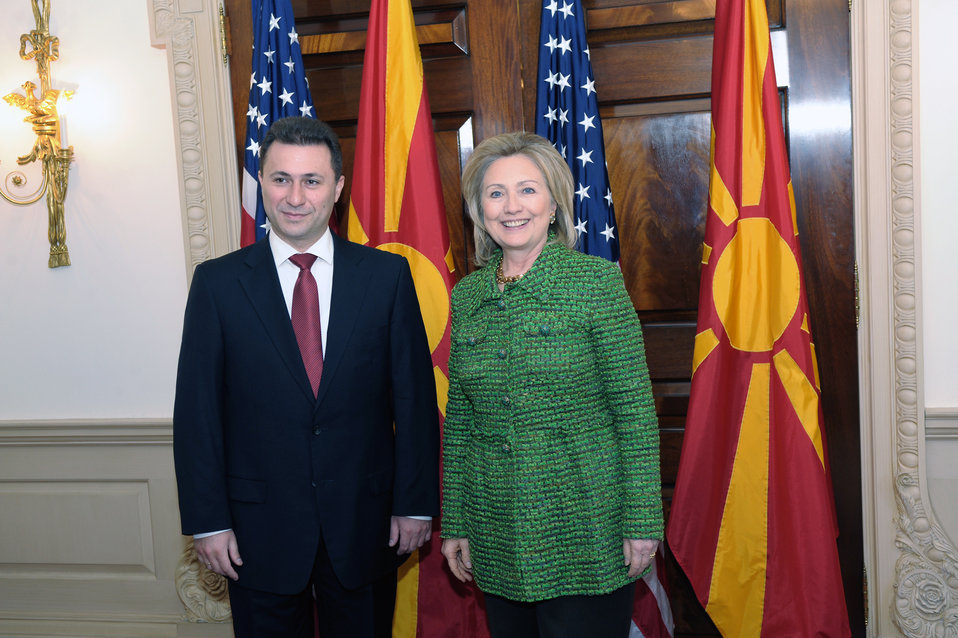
Secretary Clinton Poses for a Photo With Macedonian Prime Minister Gruevski

U.S. Secretary of State Hillary Rodham Clinton poses for a photo with Macedonian Prime Minister Nikola Gruevski after their bilateral meeting at the U.S. Department of State in Washington, D.C., on February 16, 2011.